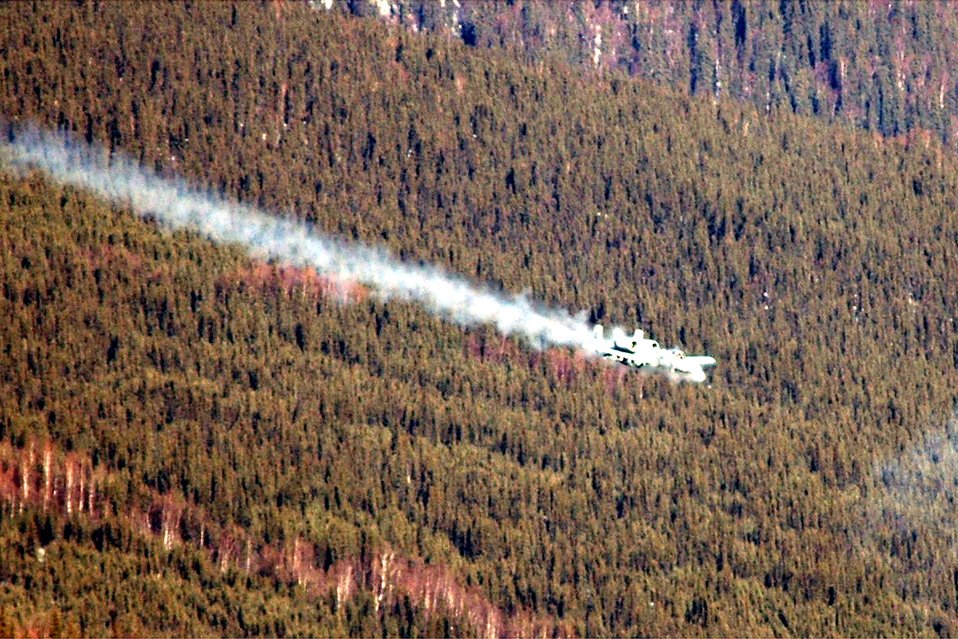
Red Flag-Alaska wraps up

An A-10 Thunderbolt II fires at a target with its 30mm Gatling gun on the range at Eielson Air Force Base, Alaska, on Friday, April 28, 2006, during Red Flag-Alaska. Joint terminal attack controllers from the 25th Air Support Operations Squadron at Hickam AFB, Hawaii, called in air support and directed planes to their targets as part of the exercise. The A-10 is from the 75th Fighter Squadron at Pope AFB, N.C.